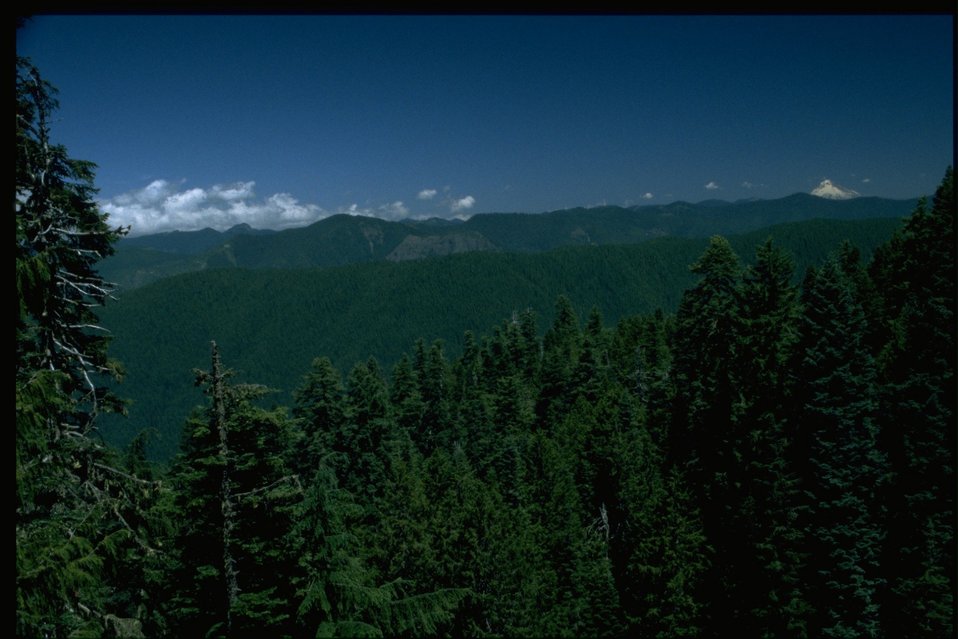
Scenic view from Mt. Horeb, Mt. Hood in the distance.